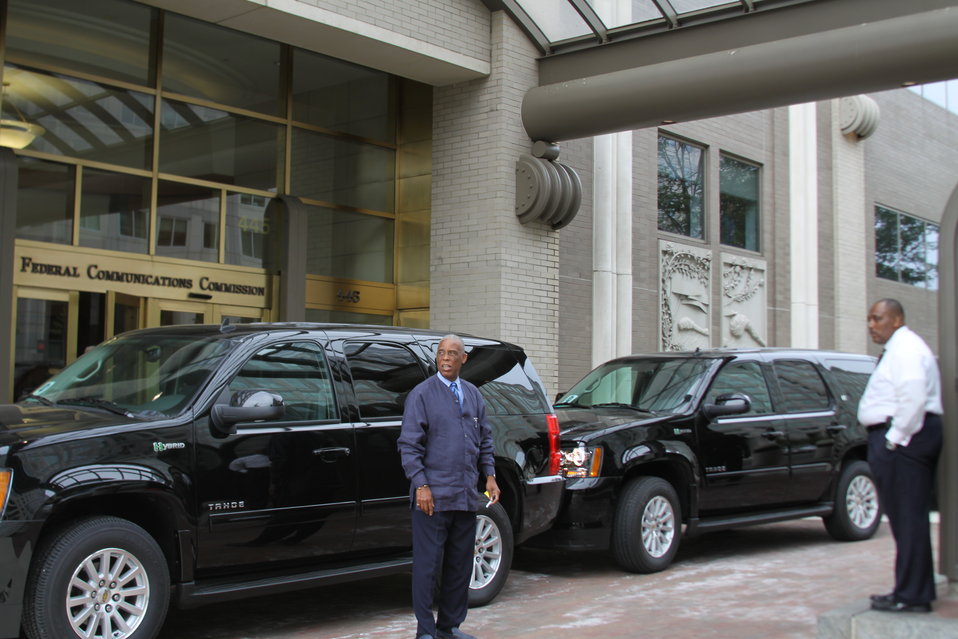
Tahoes 004